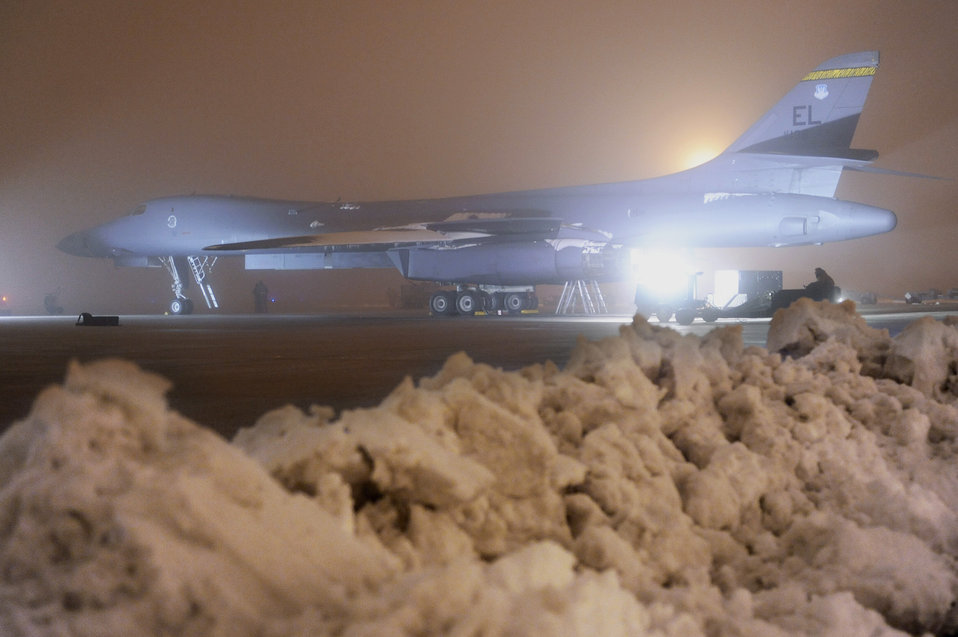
Preparing B-1B for mission

Airmen from the 28th Aircraft Maintenance Squadron at Ellsworth Air Force Base, S.D., prepare a B-1B Lancer March 27, 2011, for a mission in support of Operation Odyssey Dawn.